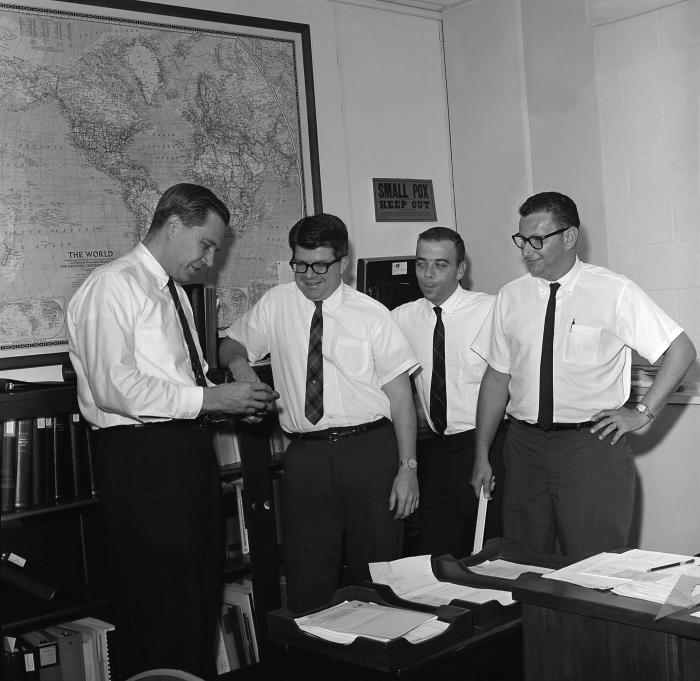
Standing left to right, this 1966 image showed Dr. Donald A. Henderson, Dr. J. Donald Millar, Dr. John J. Witte, and, Dr. Leo Morris, standing in one of the Centers for Disease Control and Prevention's (CDC) former offices discussing what may have been epidemiologic findings related to the eradication of smallpox, an effort in which the CDC was integrally involved at the time.